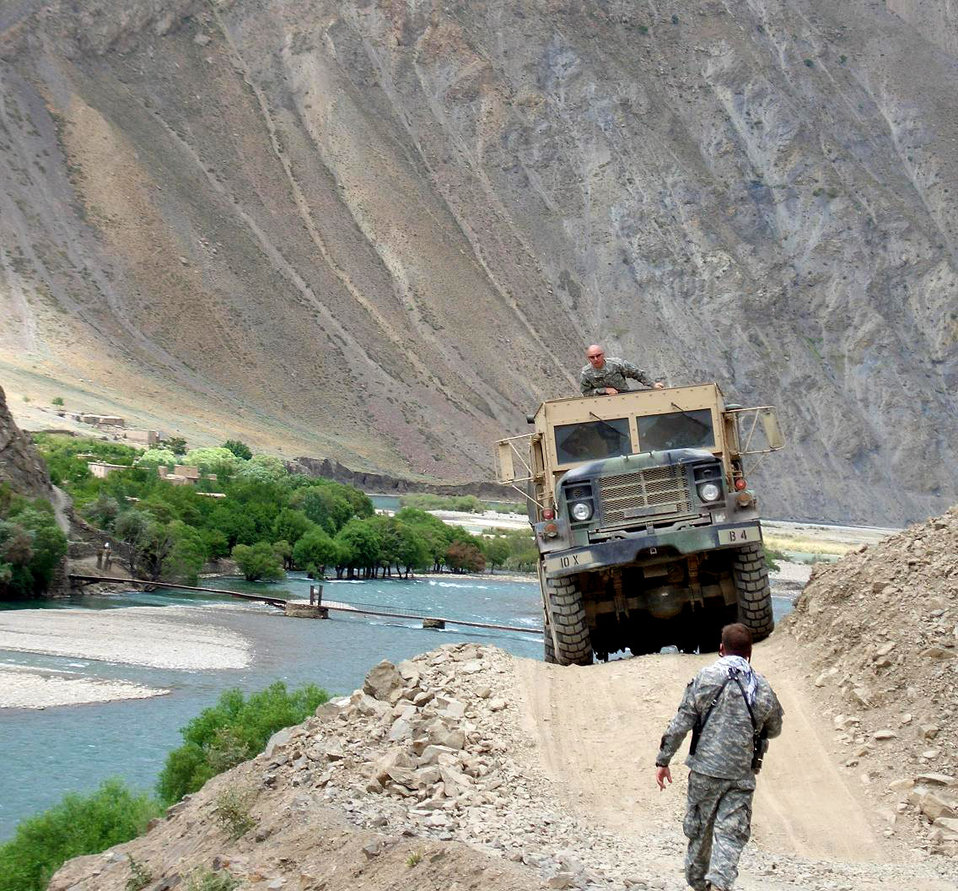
Multi-service team delivers goods to Afghan village

A five-ton, six-wheel drive truck loaded with humanitarian assistance supplies makes its way over a narrow road in the Panjshir Province, Afghanistan, on Monday, June 12. With a ground guide and spotter in the truck's turret, the multi-service supply convoy delivered supplies to the village of Dara.